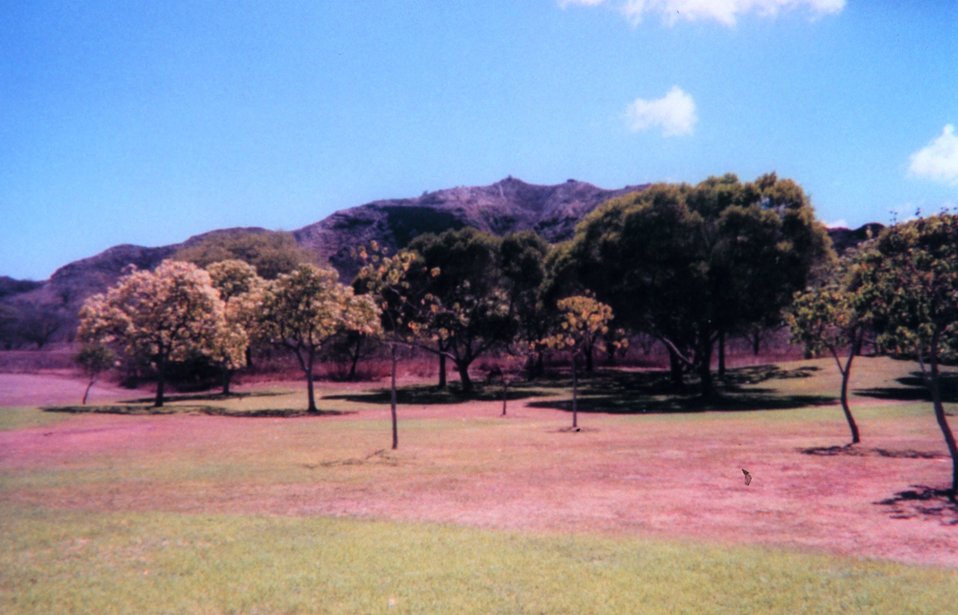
In the crater at Diamond Head State Park.